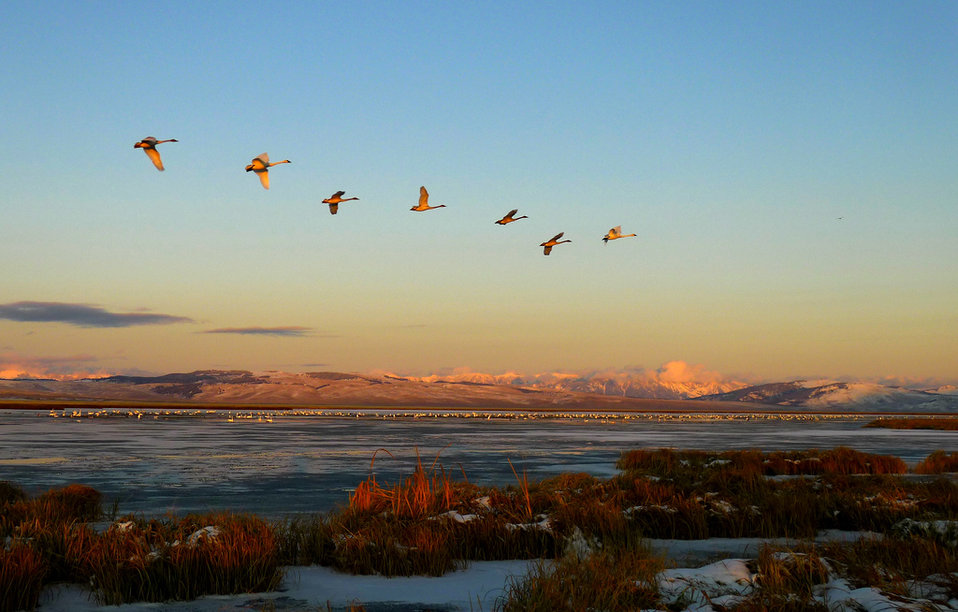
swans over Lower Red Rock Lake

Red Rock Lakes National Wildlife Refuge, MT